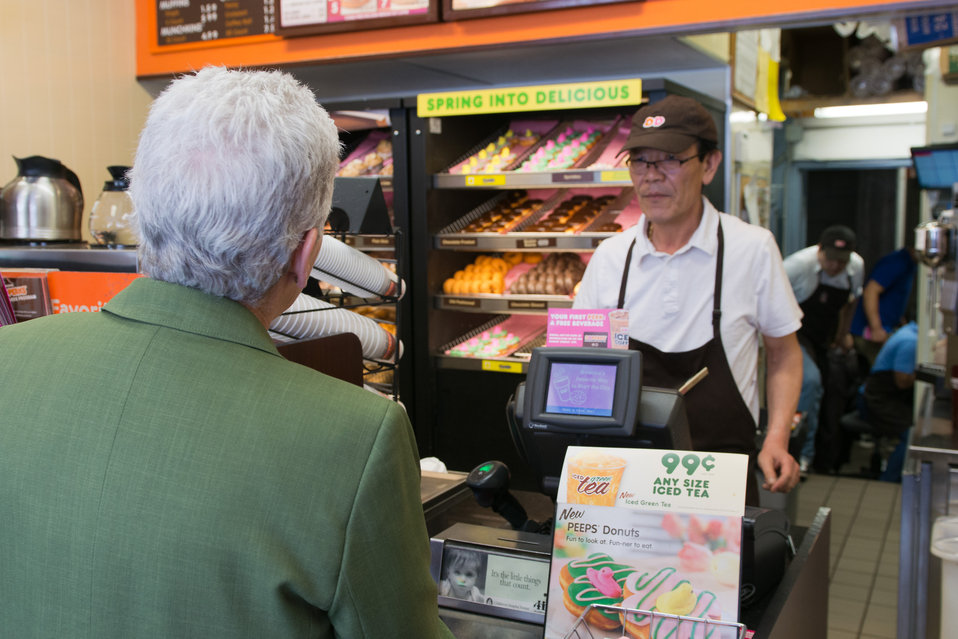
A Day In The Life of the EPA Administrator - April 22, 2014 11:30 am

EPA Administrator Gina McCarthy starts her Earth Day in Boston with a cup of her favorite coffee, always black.